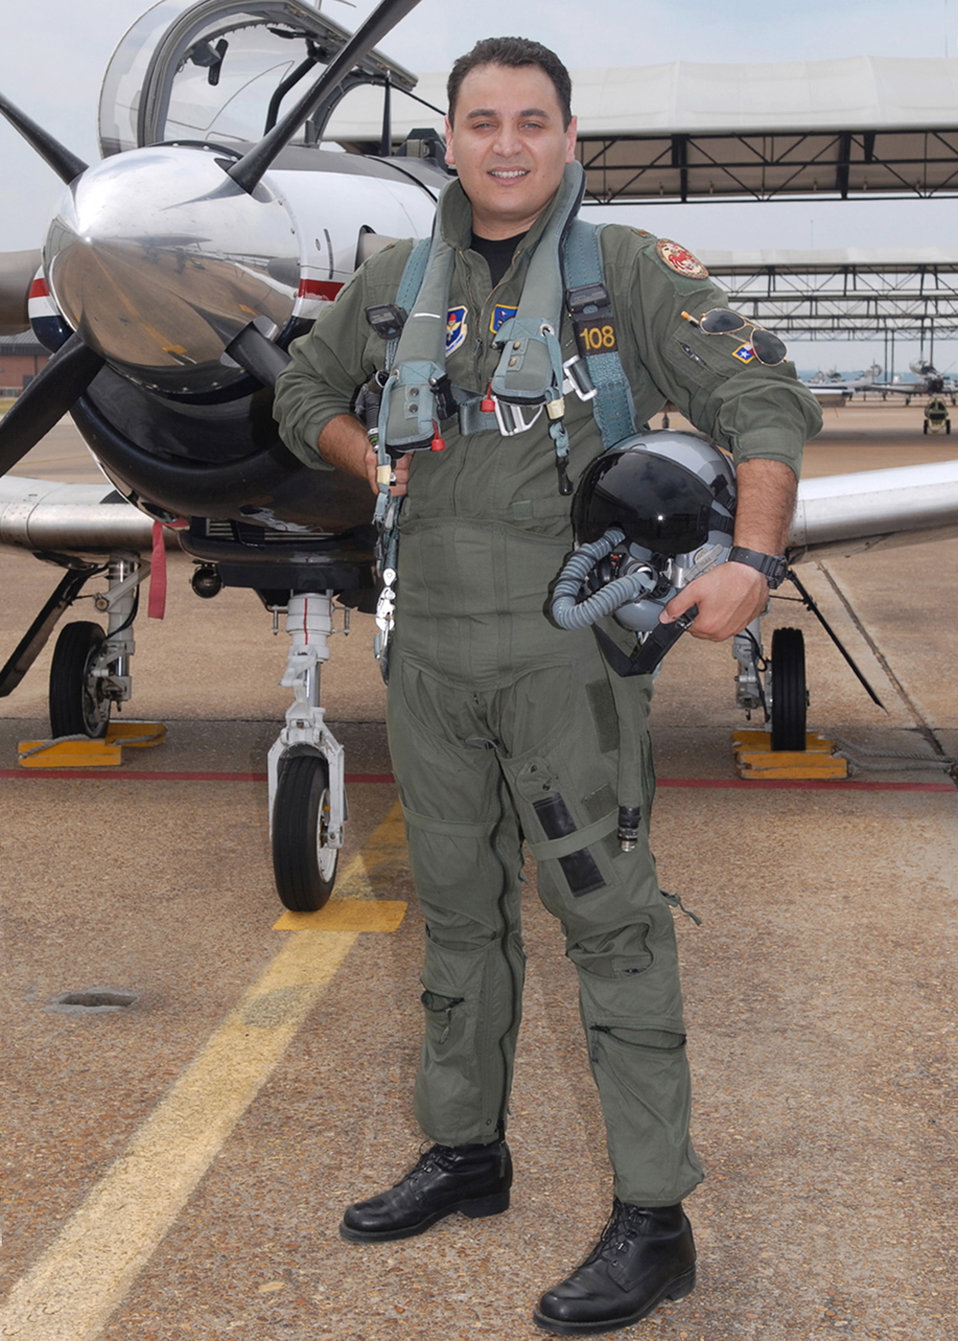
First Iraqi student graduates from Aviation Leadership Program

Iraqi air force 2nd Lt. Omar AlNuaimi graduated alongside his fellow student pilots in Specialized Undergraduate Pilot Training Class 09-12 July 24 at Columbus Air Force Base, Miss.